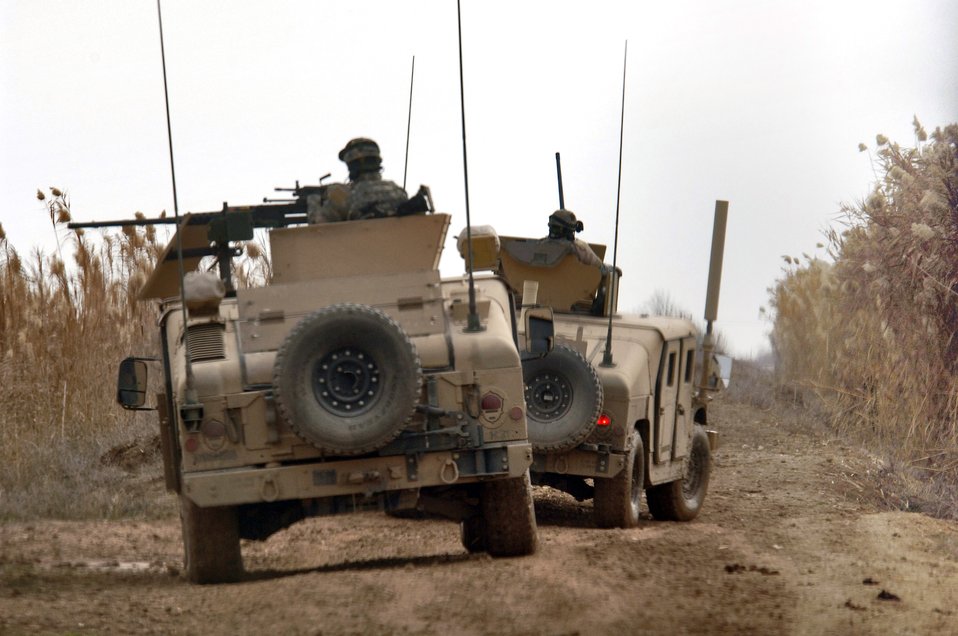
New radio technology keeps troops in contact

A convoy travels through the rural roads near Kirkuk, Iraq, in January. To ensure that convoys like this have reliable communication, the Air Force is leading a joint implementation of a new